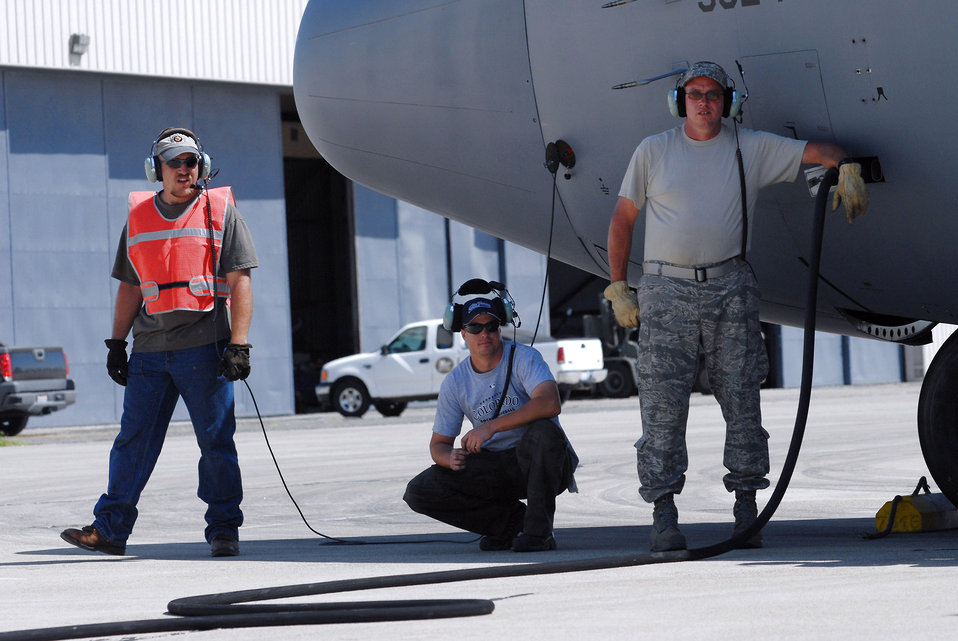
Airmen launch fifth day of California fire support

Ground crew members prepare a Modular Airborne Firefighting System-equipped C-130 Hercules to drop flame retardant in support of the northern California wilderness firefight June 30 at McClellan Airfield, Calif.